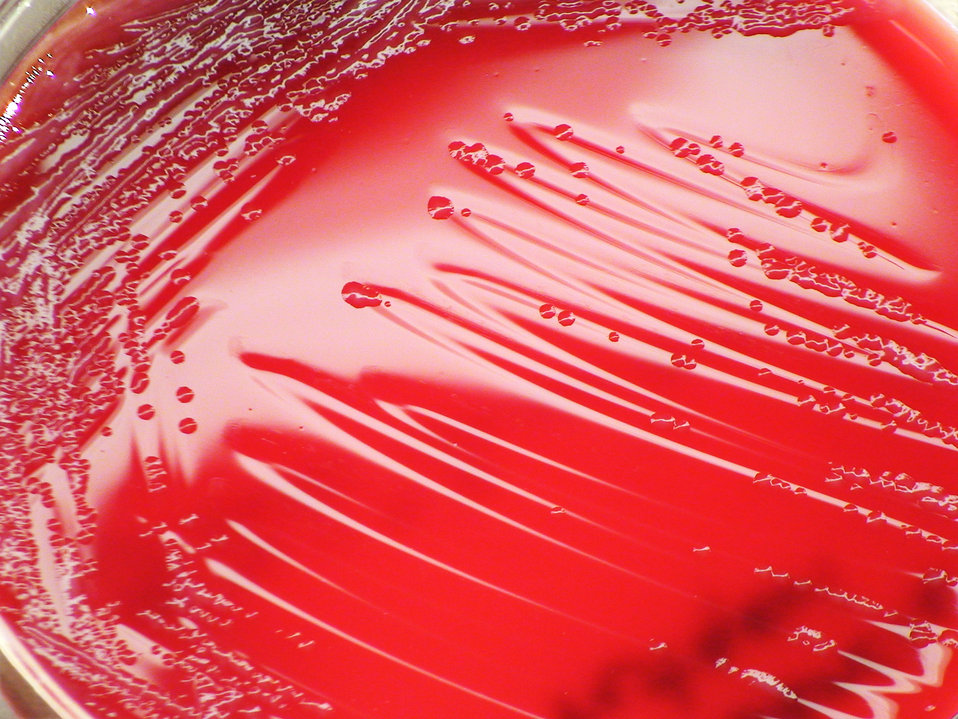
A closer view of PHIL 12455, this photograph depicts the colonial morphology displayed by Gram-negative Providencia rettgeri bacteria, which was grown on a medium of sheep's blood agar (SBA), for a 24 hour time period, at a temperature of 37�C.